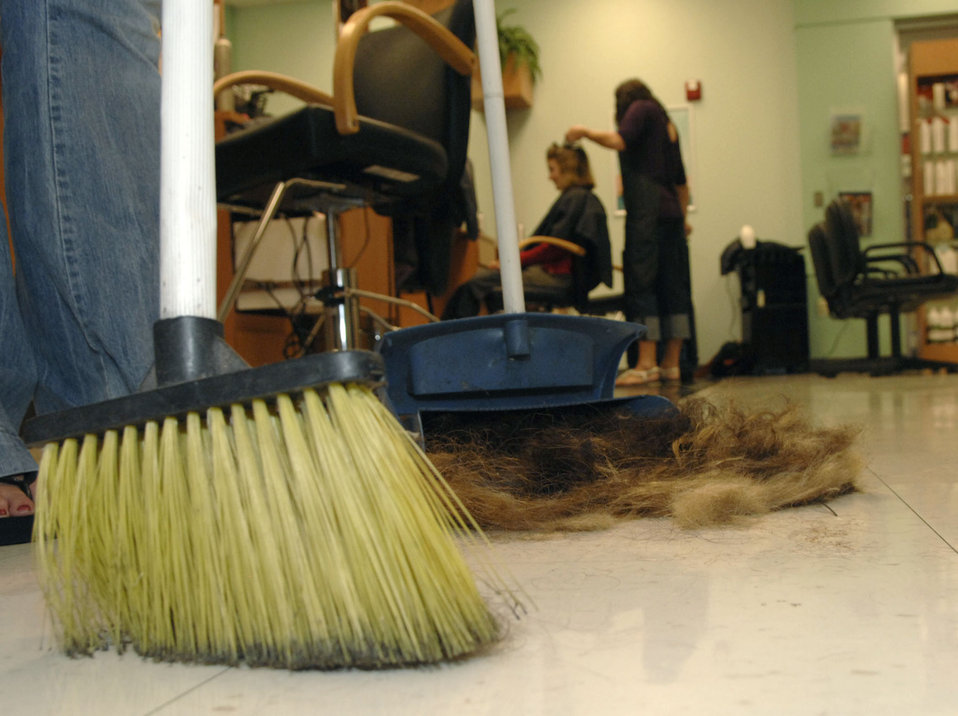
Base salon recycles hair

A stylist at the base exchange beauty salon collects hair clippings to be donated to an organization that makes booms to soak up oil to assist with the oil spill in the Gulf of Mexico.